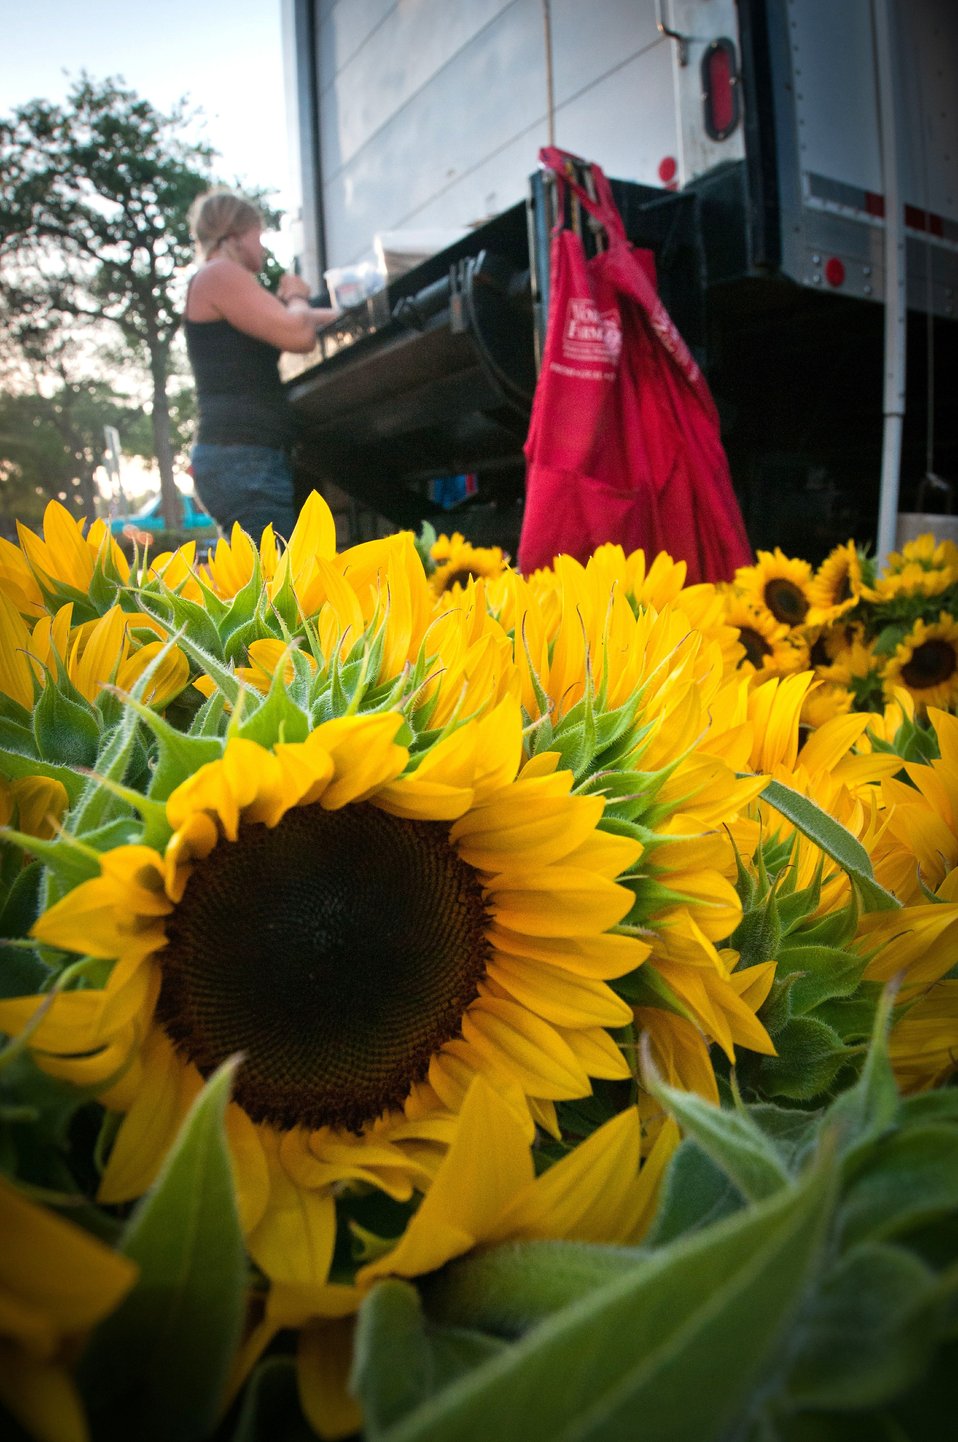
Worden Farm (www.wordenfarm.com) fresh picked organic sunflowers (decorative and edible) are ready are ready to be put on display, as staff setup operations at the Saturday Morning Market, in St. Petersburg, FL on April 14, 2012. Worden Farm is a family farm that provides certified organic produce to Southwest Florida through community supported agriculture (CSA) membership programs and retail sale at several farmer’s (community) markets. Chris Worden, Ph.D. and Eva Worden, Ph.D. founded and operates the farm that employs more than 20 people. Growing certified organic crops in the coastal sandy soil has required them to develop innovative farming techniques. These techniques help the farm as well as help the studies of universities and farm industry. There are several Worden Farm apprenticeships that provide hands-on training in all aspects of the farm, to include direct marketing at the Saturday Morning Market, or other market sites. The farm also holds culinary and gardening workshops, and other interactive educational events. One of their organic certifications is from the U.S. Department of Agriculture (USDA) and they have partnered with the USDA Natural Resources Conservation Service (NRCS) for soil conserving windbreaks and long tunnel structures to nurture seedlings and extend the growing season.